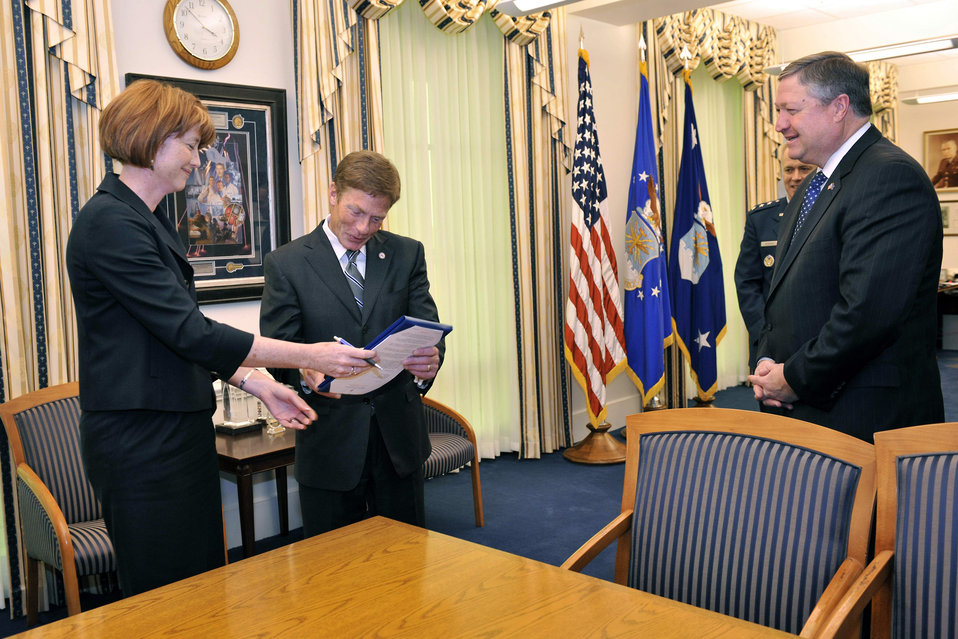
Secretary Donley announces location of newest Fisher House

Secretary of the Air Force Michael Donley (right) looks on as the Deputy Assistant Secretary for Installations Kathleen Ferguson hands the signed proffer officially accepting the donation of a Fisher House to be built on Dover Air Force Base, Del., to the Fisher House Foundation Inc. Board of Trustees Chairman Mr. Kenneth Fisher Jan. 27, 2010, at the Pentagon. The Fisher House Foundation donates comfort homes built on the grounds of major military and Veterans Affairs medical centers.